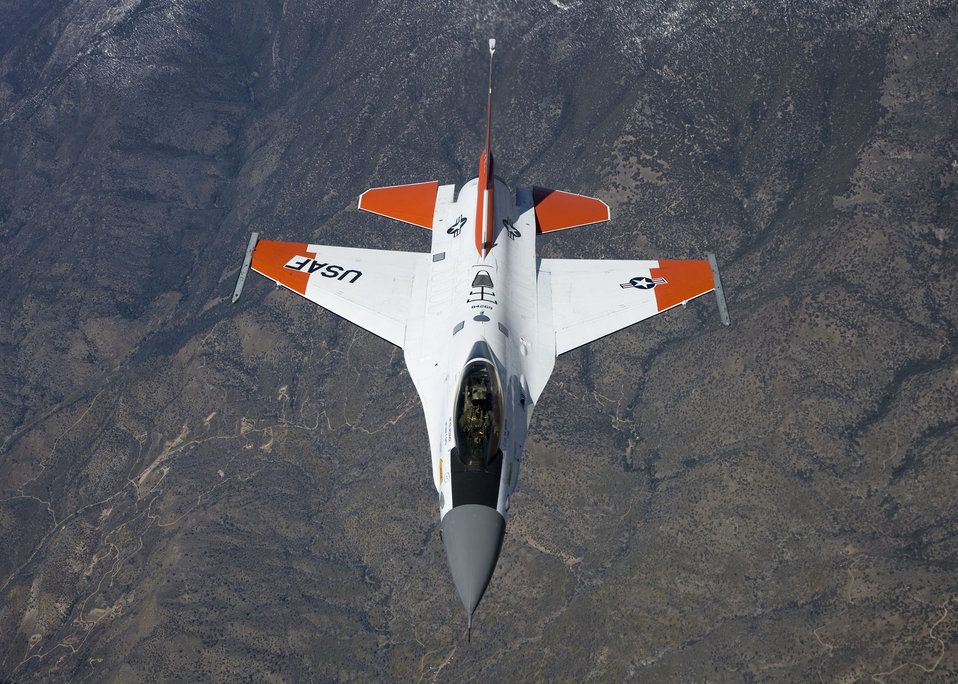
ARIA test

An F-16 Fighting Falcon fitted with radio frequency identification tags pulls in behind an NKC-135 Stratotanker during an aerial flight test April 7, 2010. The mission was to test the Automatic Receiver Aircraft Identification system installed on the NKC-135 test tanker.